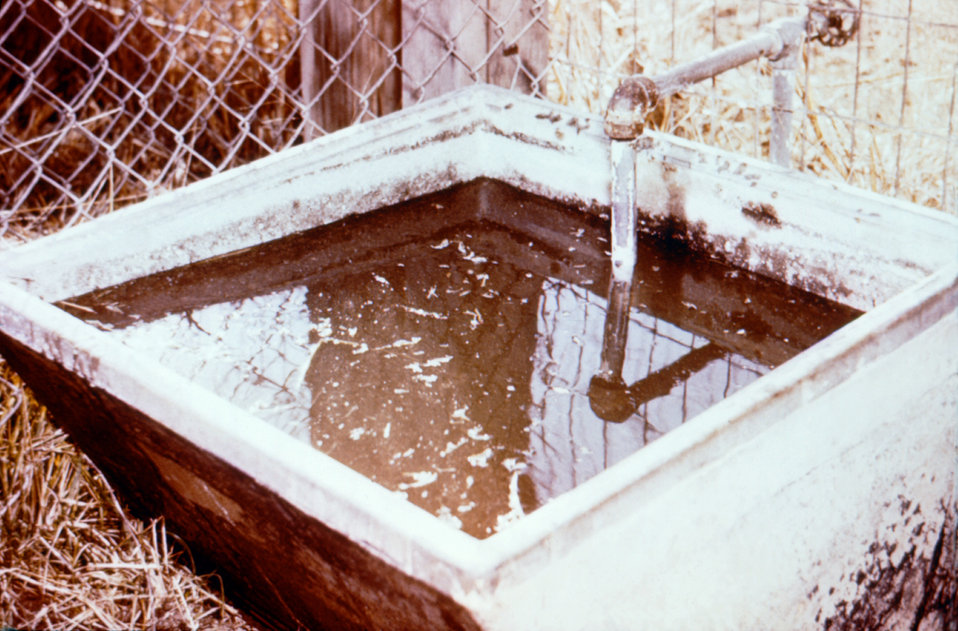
In this case, the submerged water faucet of this stock tank makes the back siphonage of contaminated water possible.